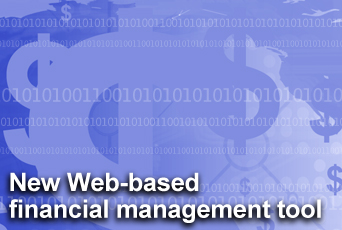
Dashboard tool allows snapshot of organizational status

Air Force officials are rolling out a Web-based financial management tool this summer designed to help commanders and other Air Force decision makers.